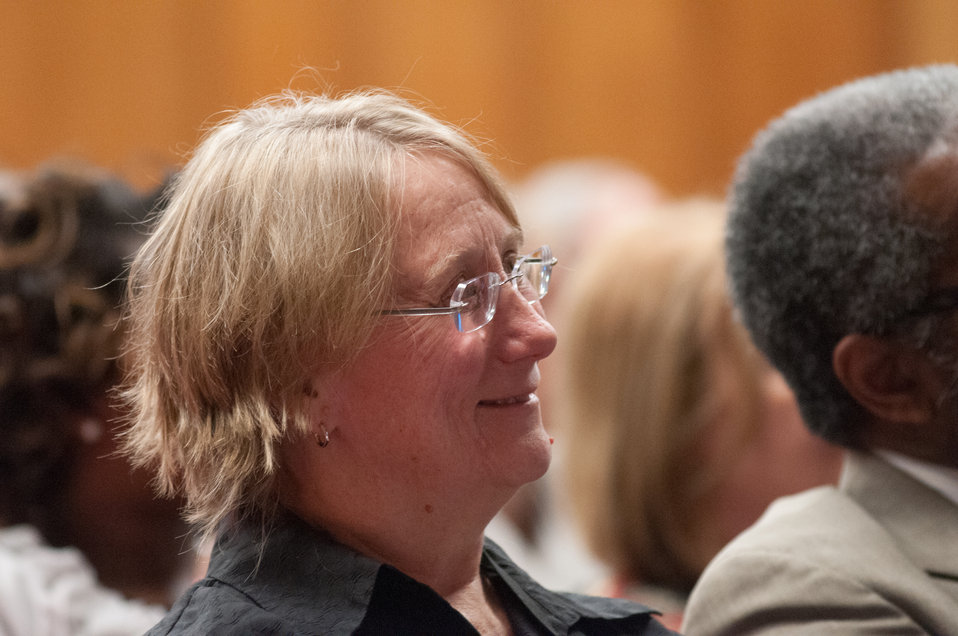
U.S. Department of Agriculture (USDA) Deputy Chief of Staff Carole Jett, listen to the speakers, during the 2013 Women’s History Month Observance event, “Women Inspiring Innovation Through Imagination: Celebrating Women in Science, Technology, Engineering, and Mathematics, on Thursday, March 21, 2013, in Washington, D.C. The keynote speaker is American Association of University Women Executive Director and CEO Linda Hallman. Additional remarks were made by Agriculture Deputy Secretary Dr. Kathleen Merrigan; Rural Development Acting Deputy Under Secretary Judith Canales; Administration Deputy Assistant Secretary Deputy Assistant Secretary Robin Heard; and Agriculture Research Service National Programs Associate Administrator Dr. Chavonda Jacobs-Young.